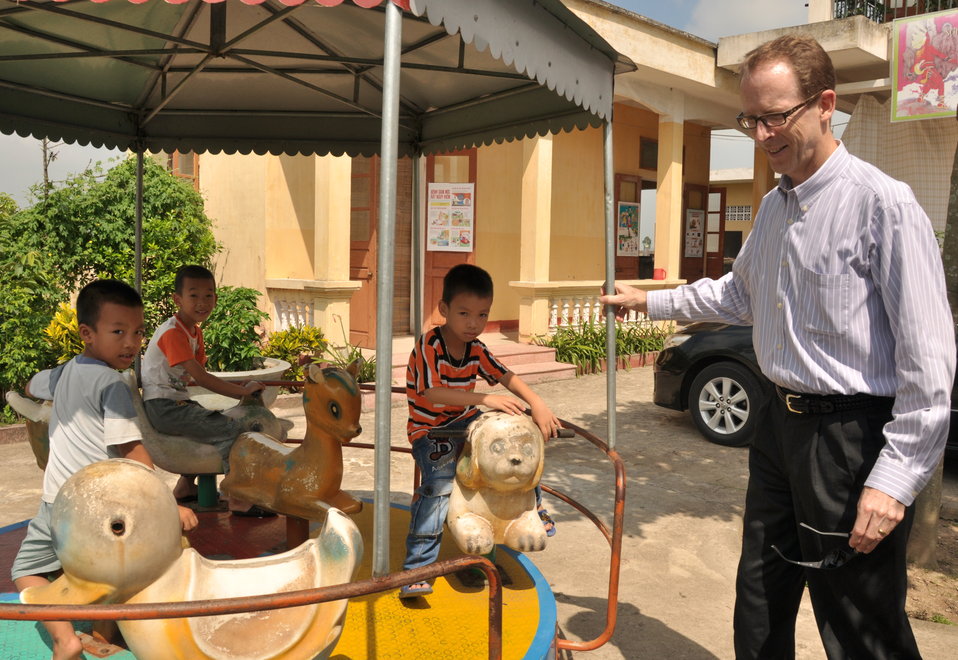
USAID Delivers Deworming Medication to Kindergartners in Nam Dinh Province

USAID Mission Director Joakim Parker gives with kindergarten children in Nam Dinh Province.

June 1, 2013